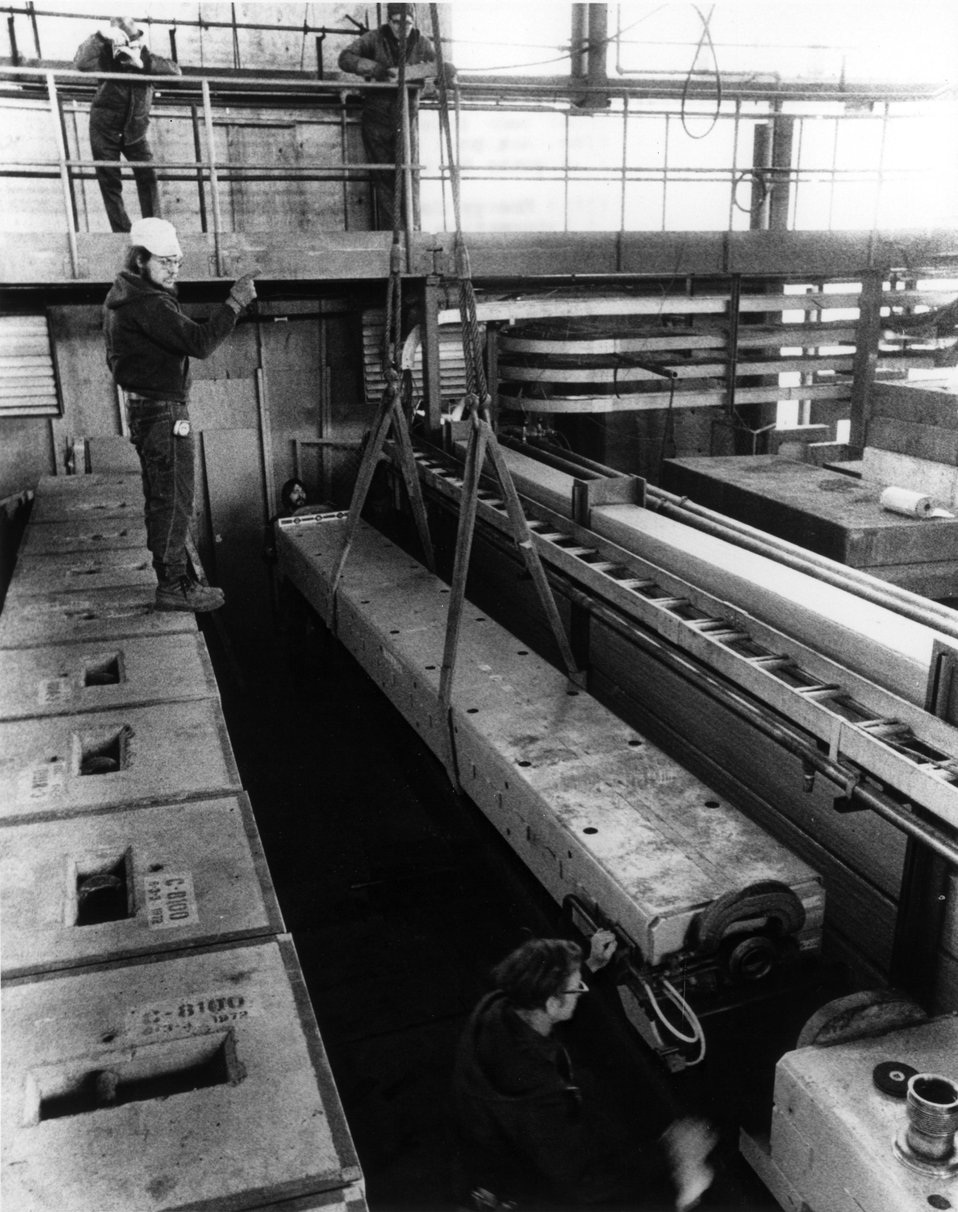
Installing a magnet in one of the experimental beam lines in the Meson experimental area. c. 1974